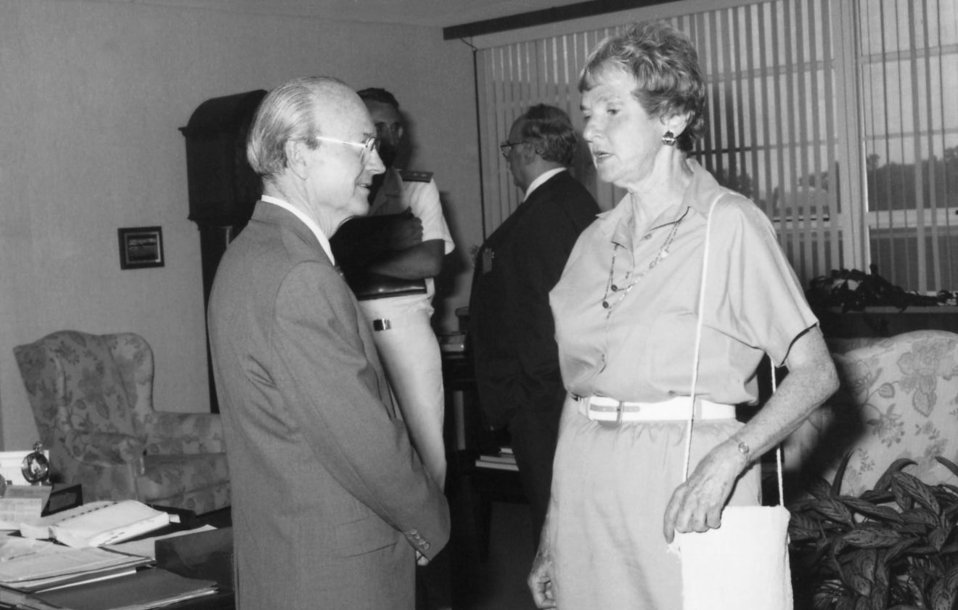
This 1992 photograph, taken during the Centers for Disease Control's 46th anniversary ceremony, showed former Deputy Director, Dr. Walter Dowdle (left) speaking with historian Dr. Elizabeth Etheridge.